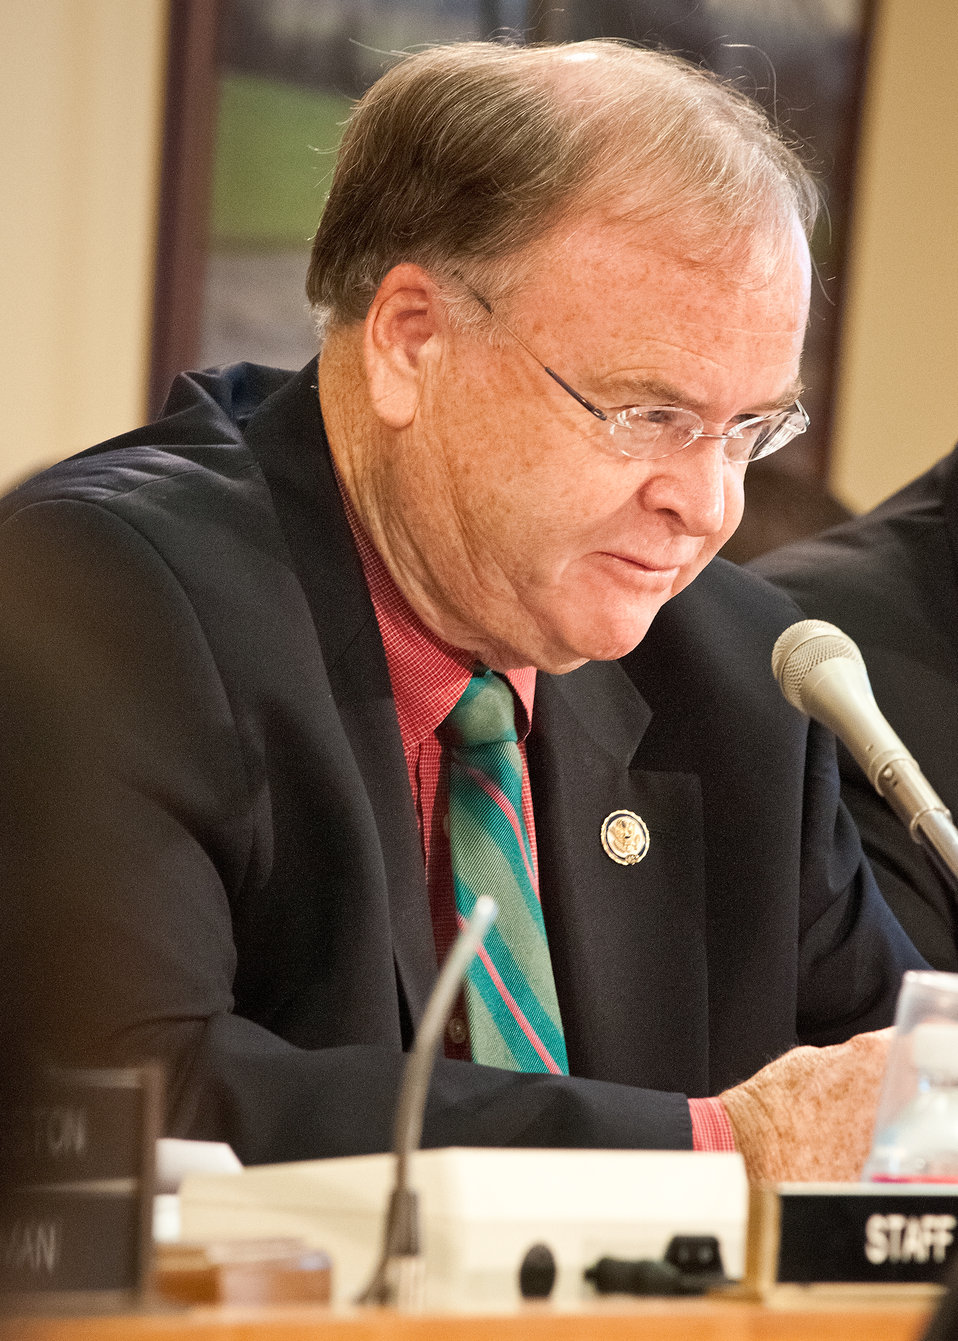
Congressman Sam Farr, California a member of the House Agriculture Appropriations Committee posed questions to Agriculture Secretary Tom Vilsack and members of his sub-cabinet during a House Agriculture Appropriations Committee meeting to discuss the United States Department of Agriculture budget in the Rayburn House Office Building on Friday, February 17, 2012 in Washington, D.C.